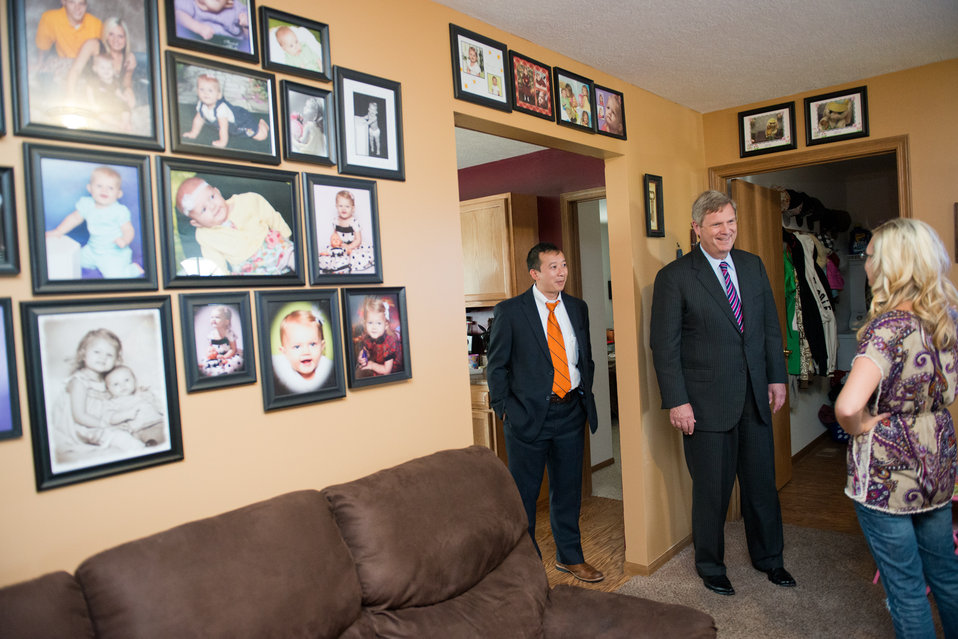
Agriculture Secretary Tom Vilsack (center) talks “kids and grandkids” with Arbor Village homeowner Jacquie Noel and Agriculture Department Executive Assistant to the Secretary Lanon Baccam (left) during a commemoration of National Homeownership Month in Fayette County, OH on Thursday, June 28, 2012. This community was built with assistance from the U.S. Department of Agriculture (USDA) Rural Development (RD) housing funding sources such as Mutual Self-Help and the Single Family Direct and Guaranteed Loan programs. As part of the completion of nearly 240 Self-Help housing units at Arbor Village, more than 100 very low-income families have realized the dream of home ownership.